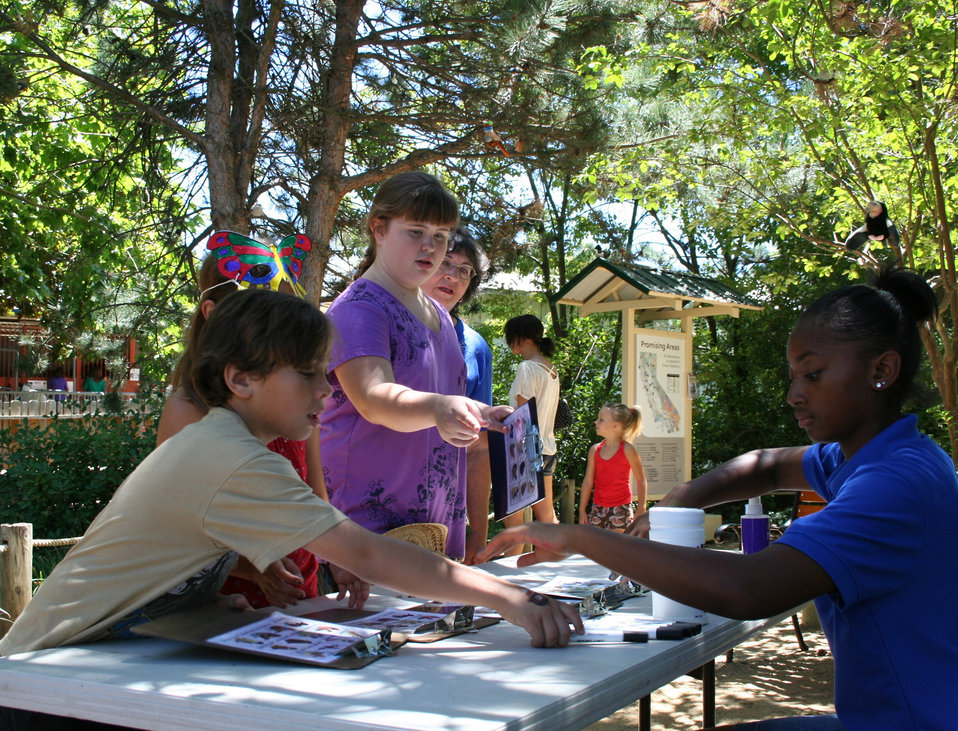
Bird bingo is a bird watching game

For the first time DOI agencies [US Fish and Wildlife Service, Bureau of Reclamation and Bureau of Land Management] joined together to host an America's Great Outdoors Booth at the California State Fair in Sacramento, Calif., July 14 - 31.

The booth included informational panels and displays as well as a children's activity area. Activities: wildlife masks, temporary tattoos, water-cycle bracelets, fish prints, touch boxes, scat bingo, a green-screen, coloring and bird bingo. Five days a week live raptors, snakes and bats were brought in.

About 50,000 children visitied the booth during the 18-day fair.